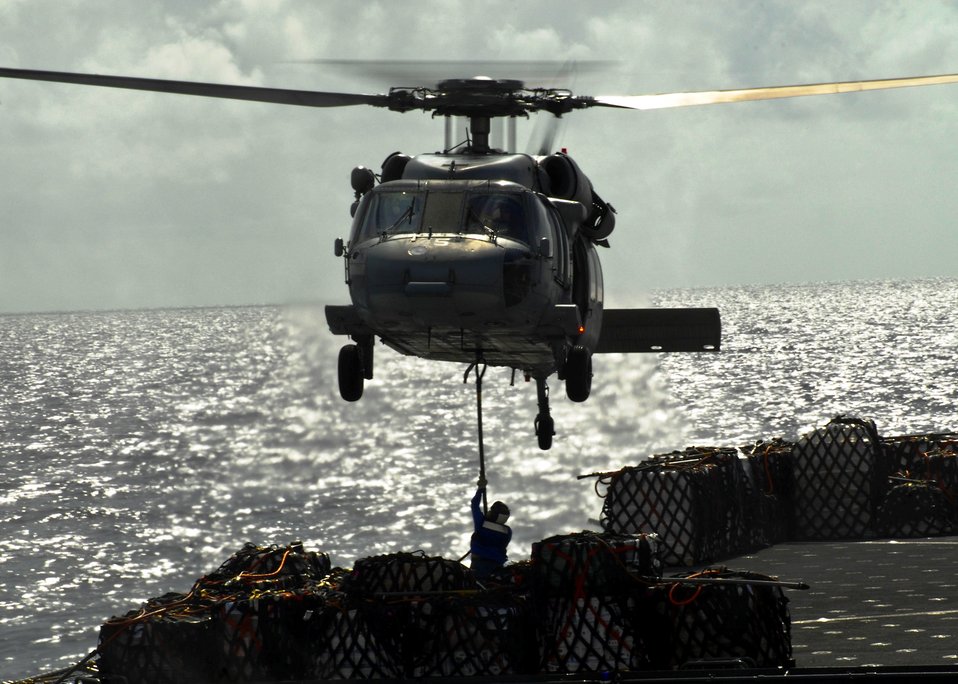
A Crewmember Aboard Dry Cargo/ Ammunition Ship USNS Richard E. Byrd (T-AKE 4) Attaches a Pallet Cable

A crewmember aboard Dry Cargo/ Ammunition Ship USNS Richard E. Byrd(T-AKE 4) attaches a pallet cable during a vertical replenishment (VERTREP) with an MH-60S Knighthawk helicopter from Helicopter Sea Combat Squadron 23 “Wild Cards”, embarked aboard the Military Sealift Command hospital ship USNS Mercy (T-AKE 4) on July 11, 2010. Mercy is conducting Pacific Partnership 2010, the fifth in a series of annual U.S. Pacific Fleet humanitarian and civic assistance endeavors to strengthen regional partnerships.